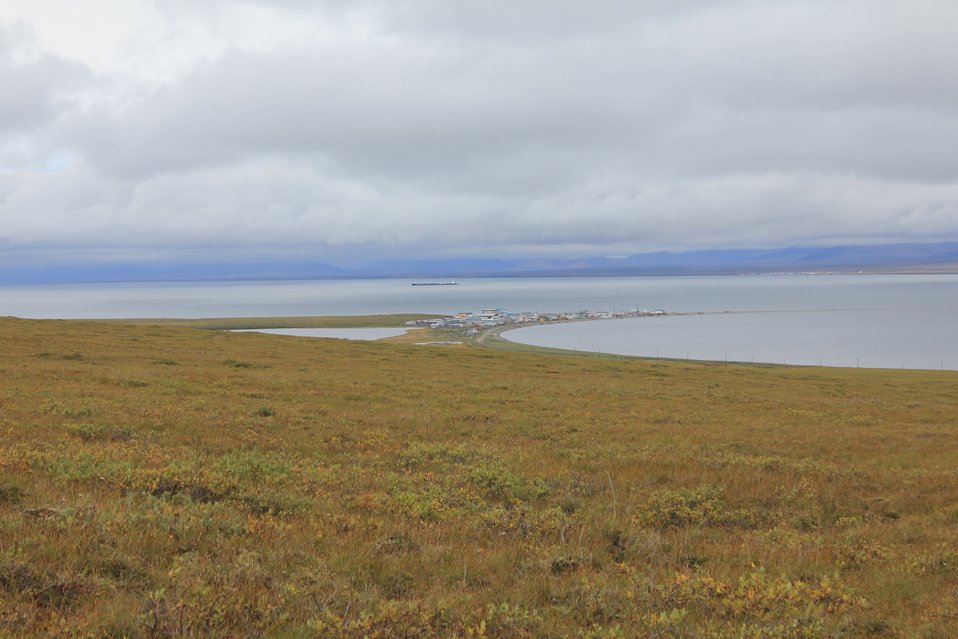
The native village of Teller at the east end of Port Clarence. A Crowley Marine articulated tug in the bay.